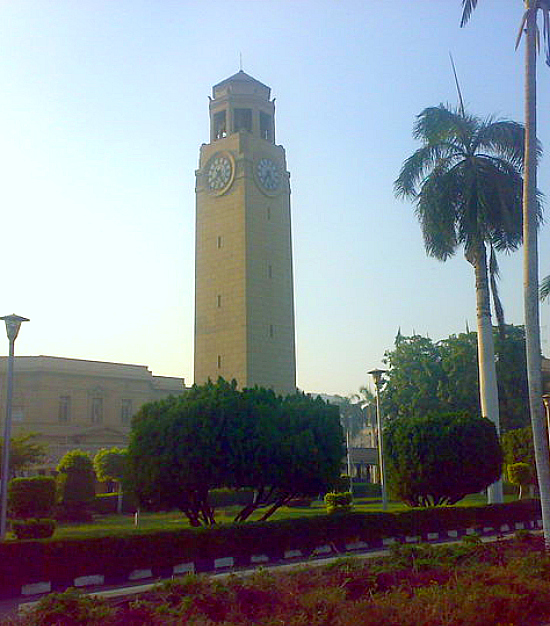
Cairo University Clock